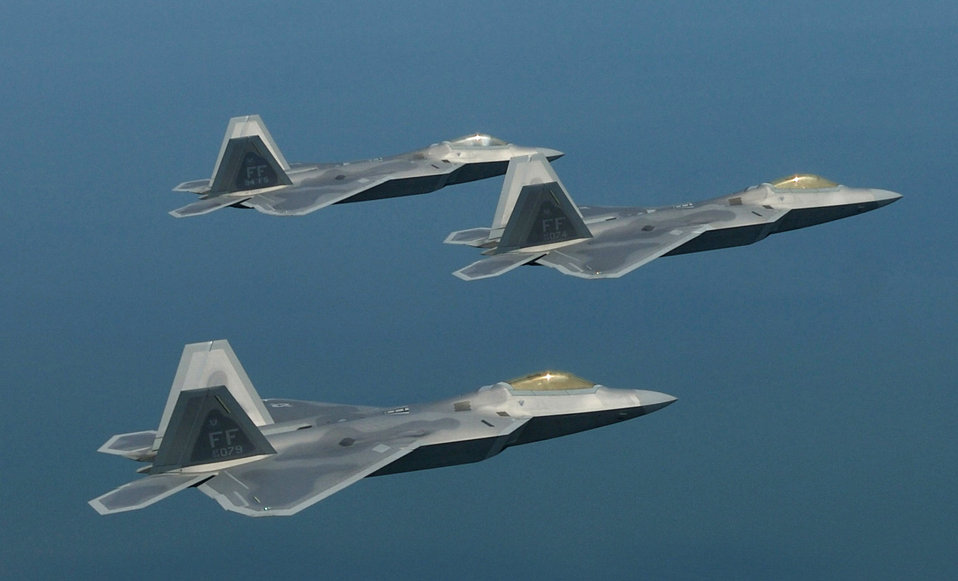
100th F-22 delivered

F-22 Raptors fly in formation. Lockheed Martin delivered the 100th F-22 to the Air Force Aug. 29 in Marietta, Ga., and the latest aircraft will be assigned to the 90th Fighter Squadron at Elmendorf Air Force Base, Alaska.